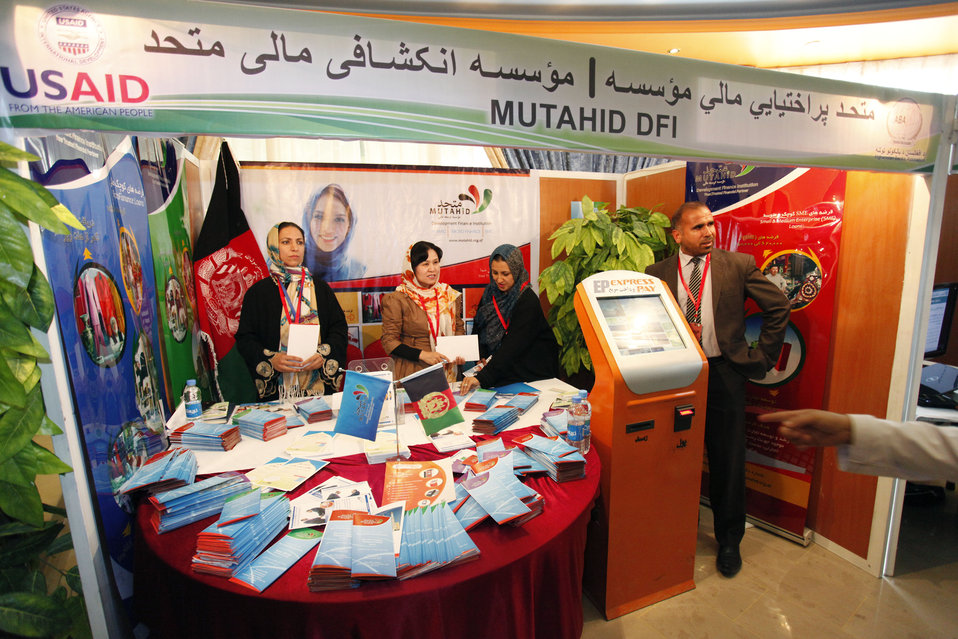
Access to Finance Exhibition in Kabul

Exhibitors in their booth at the Second Access to Finance Exhibition in Kabul on Tuesday, October 29, 2013. Thousands of business representatives from across Afghanistan attended the exhibition promoting branchless banking and electronic payments.